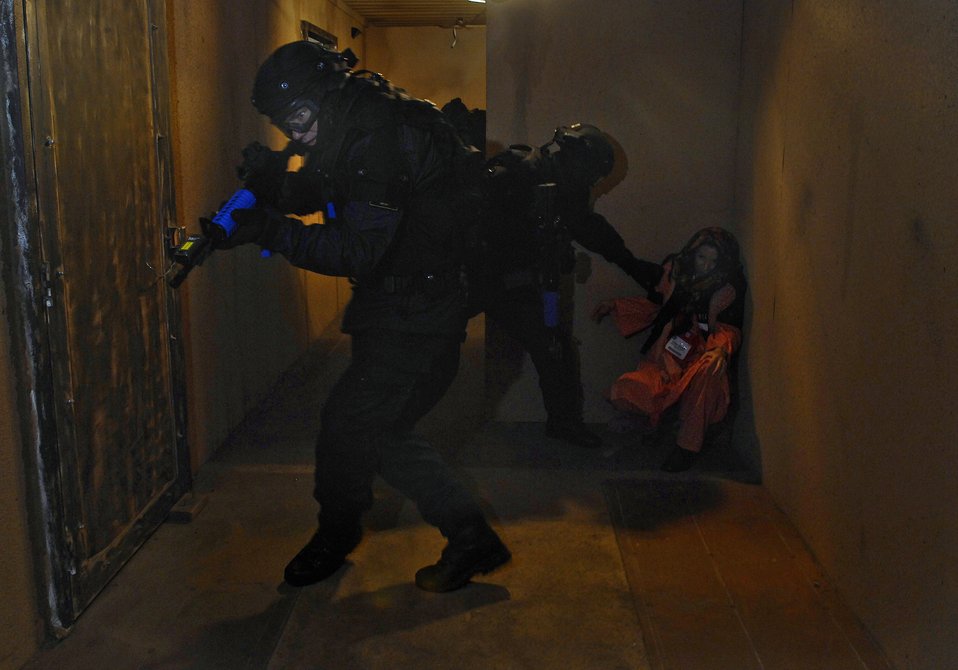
Conference makes virtual training a reality

A Swedish special weapons and tactics team rescues a hostage during a simulated hostage rescue situation Nov. 28 during the Interservice/Industry Training, Simulation and Education Conference in Orlando, Fla.